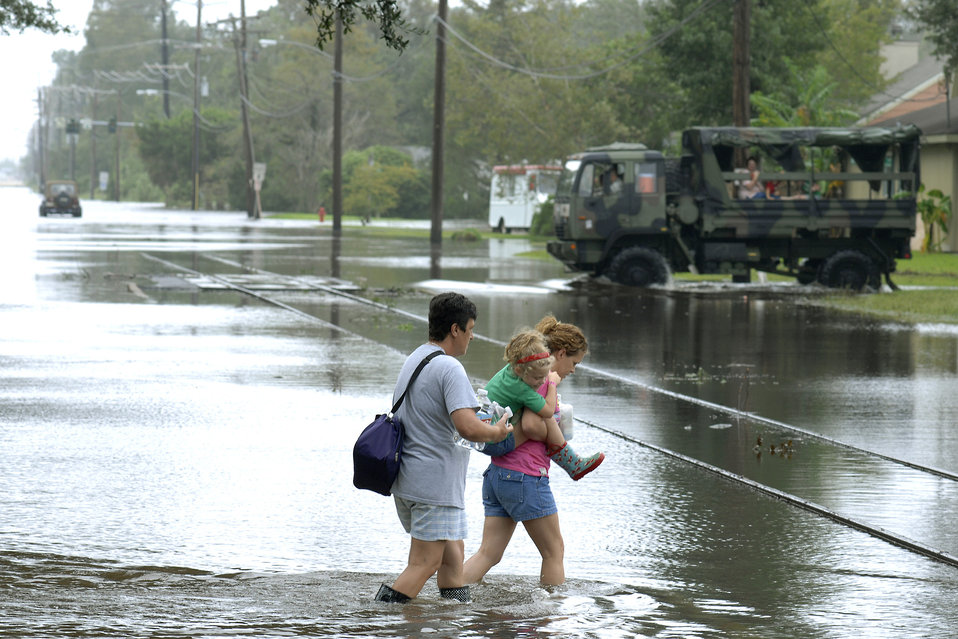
Watchful Eye

Residents of Lake Charles, La., carry relief supplies to family members as Louisiana Army National Guardsmen search through the floods caused by Hurricane Ike for families in need of assistance Sept. 13.